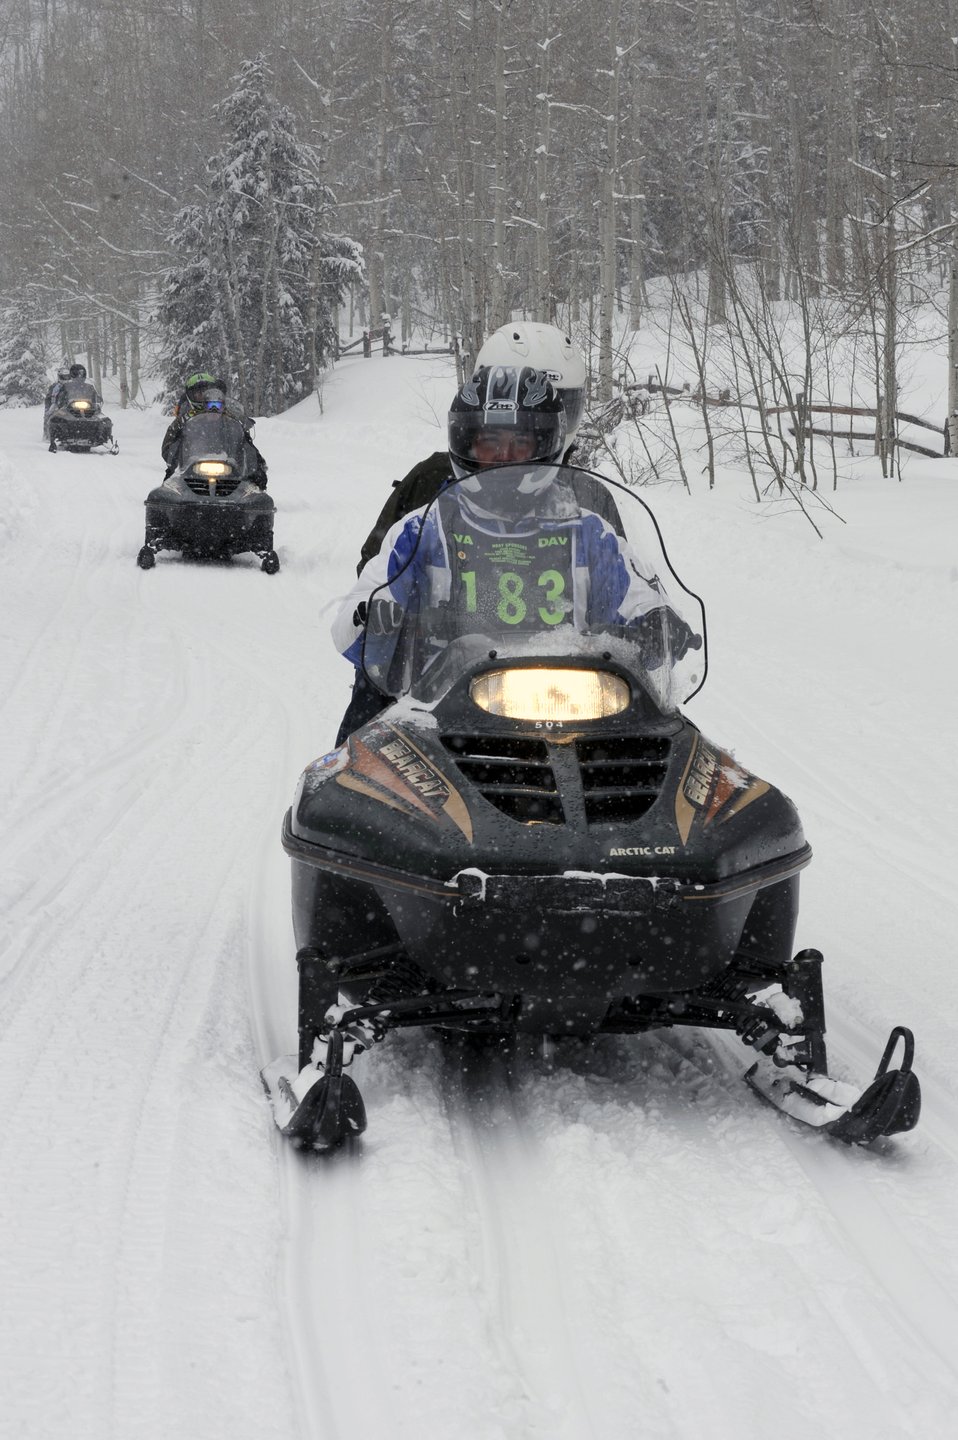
23rd National Disabled American Veterans Winter Sports Clinic

Senior Airman Kevin Krogh drives a snowmobile Apr. 1 during the 23rd National Disabled American Veterans Winter Sports Clinic in Snowmass Village, Colo. Airman Krogh lost both legs in a major car accident in 2007 and this is his first year attending the sports clinic. Airman Krogh is assigned to Fort Sam Houston in San Antonio.